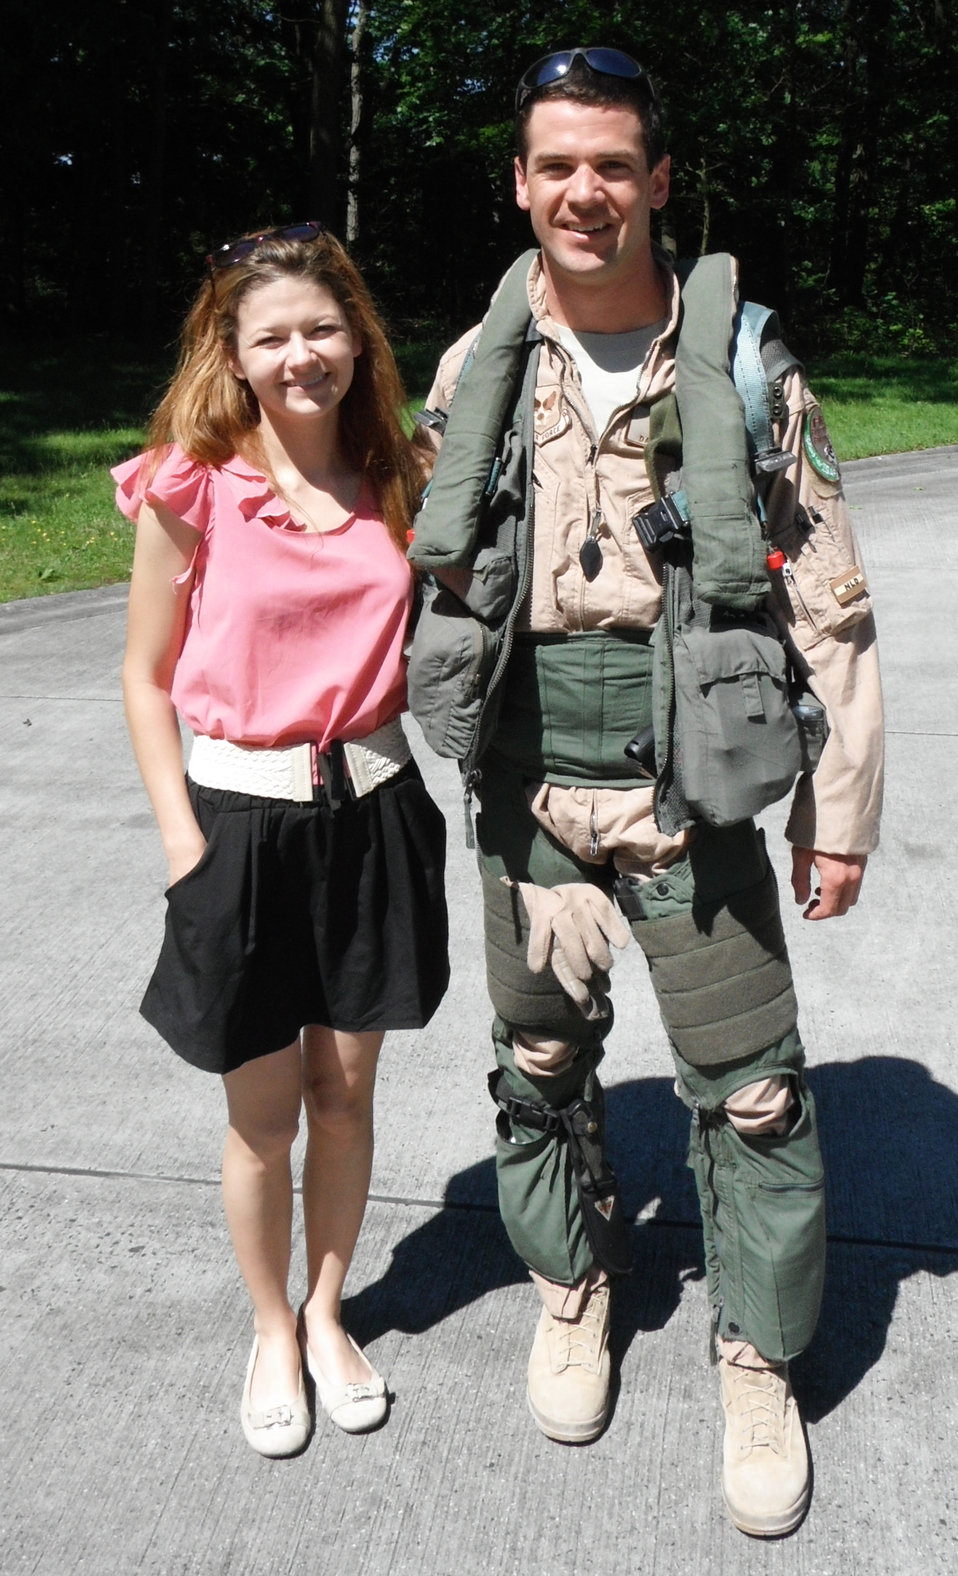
Pilot Exchange Program

Maj. Dan McGuire, an F-16 exchange pilot who was assigned to the 312th
Tactical Fighter Squadron at Volkel Air Base in the Netherlands, and his
wife, Jen, reunite on May 25, 2012, following McGuire's four-month deployment to
Afghanistan. McGuire deployed to Mazar-e-Sharif, Afghanistan, with the Dutch
Air Task Force, a detachment of the Royal Netherlands Defense. McGuire
participated in the Air Force Personnel Exchange Program and the couple
lived in the Netherlands for two years. Prior to moving, both became fluent
in Dutch through a six-month course offered by the Defense Language
Institute in Alexandria, Va. In November, the McGuire's relocated to the
Arizona Air National Guard's 162nd Fighter Wing in Tucson, Ariz.